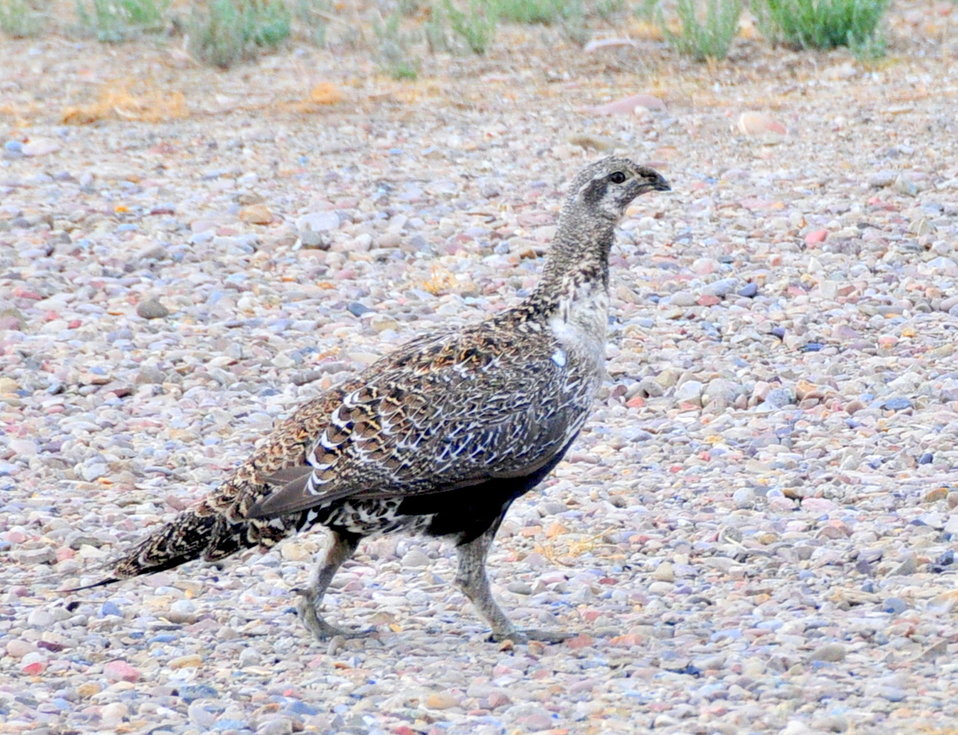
Sage Grouse Seedskadee NWR

A sage grouse walks past the Seedskadee NWR headquarters on the way to the Green River.